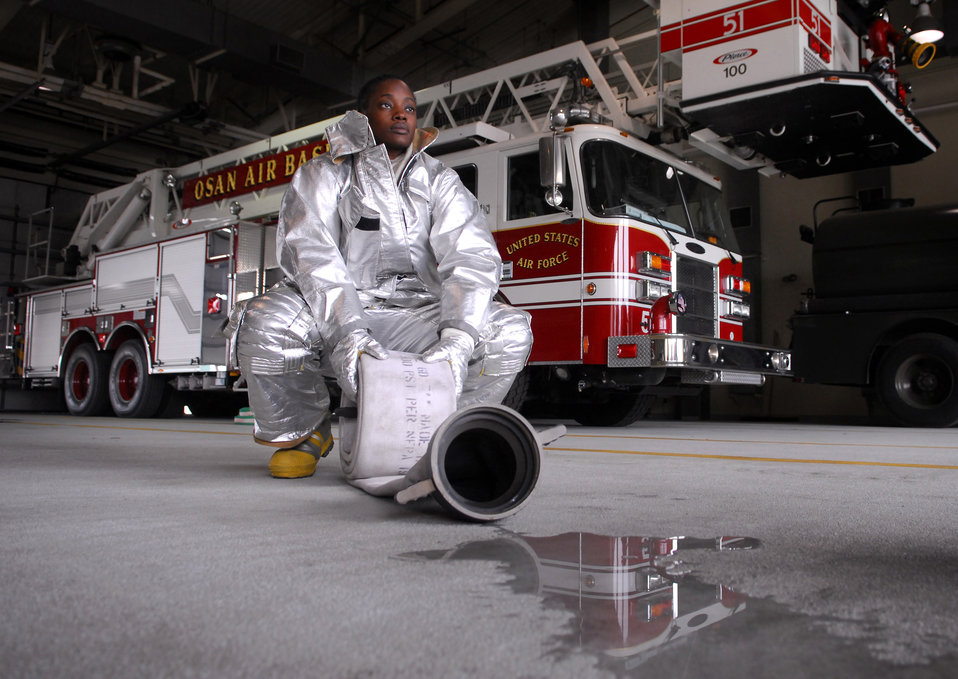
Getting the job done

Staff Sgt. Mariela Miles rolls up a fire hose in the fire department's vehicle bay at Osan Air Base, South Korea. Sergeant Miles is with the 51st Civil Engineer Squadron and is the only female firefighter on the base.